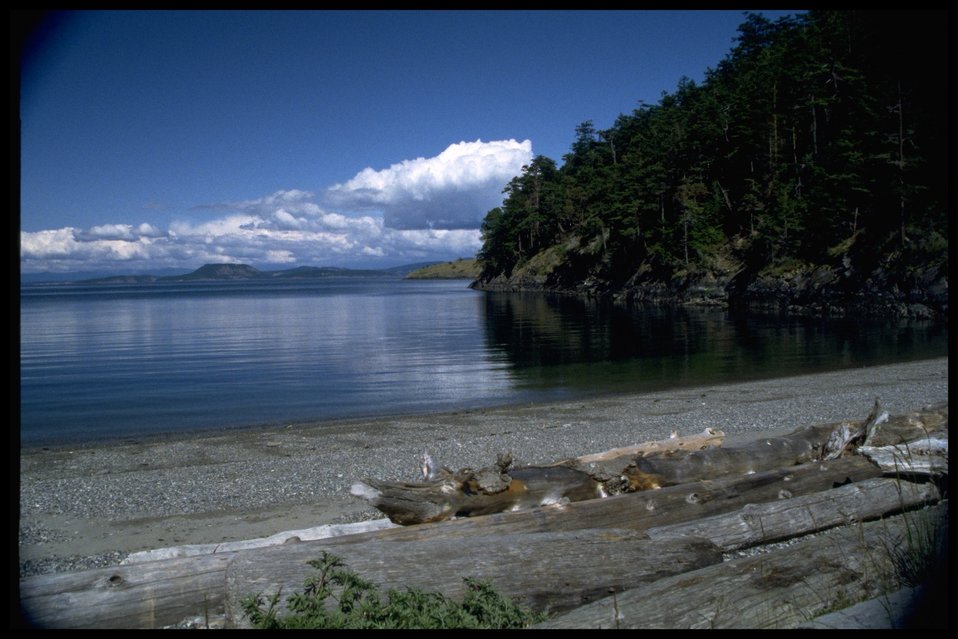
Watmough Bay.